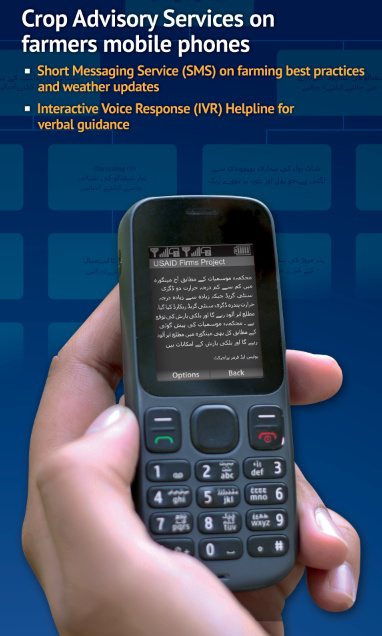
Services